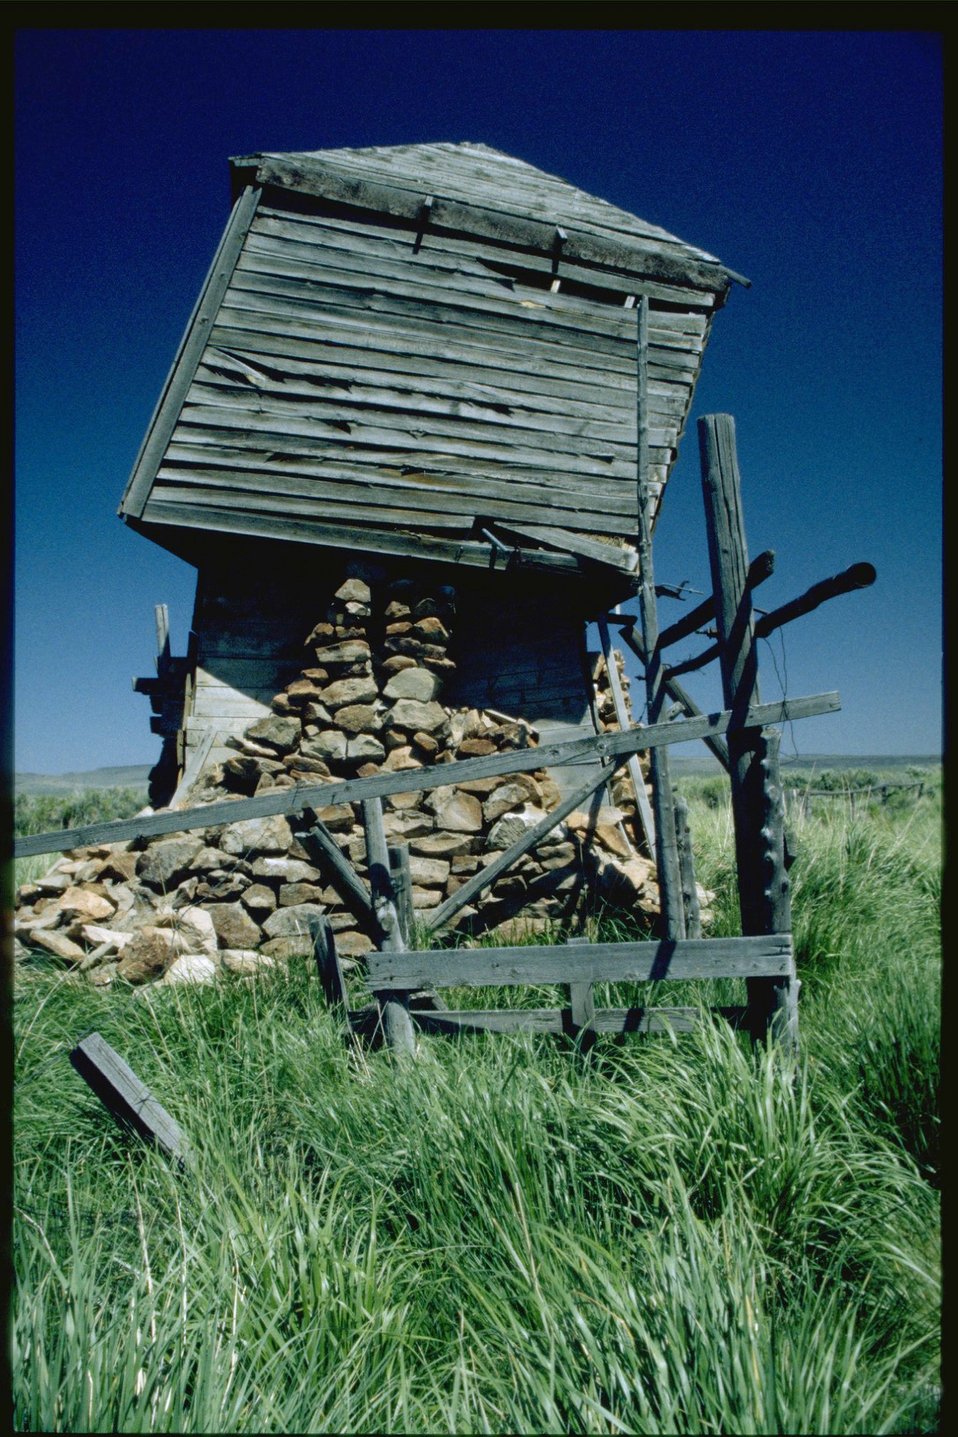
Shirk Ranch.